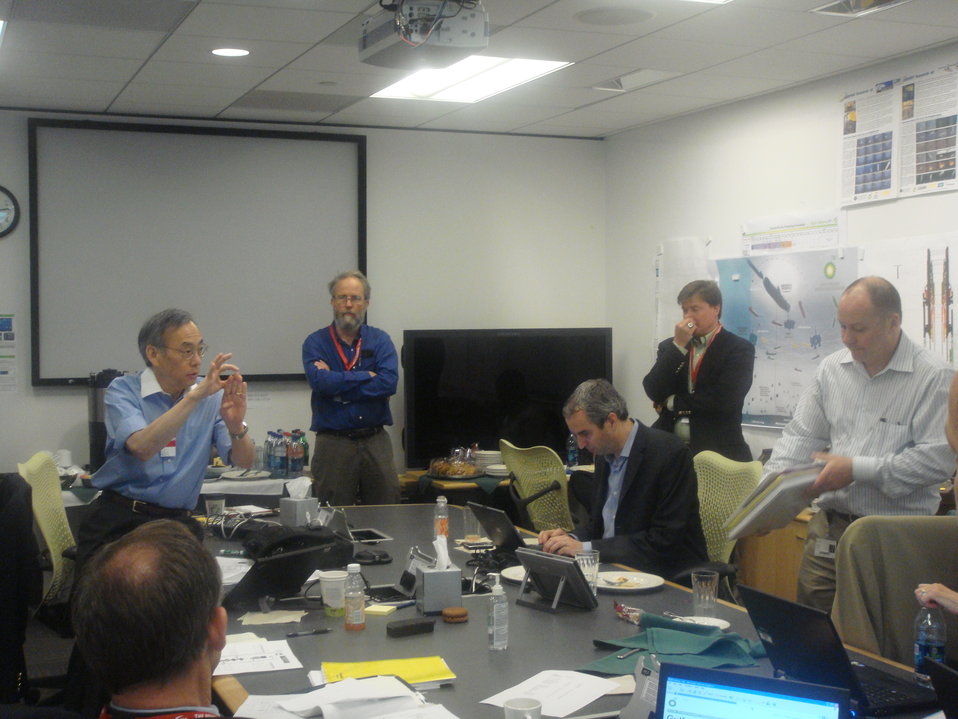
U.S. Energy Secretary Steven Chu confers with scientific experts and BP officials on the 'top kill' strategy